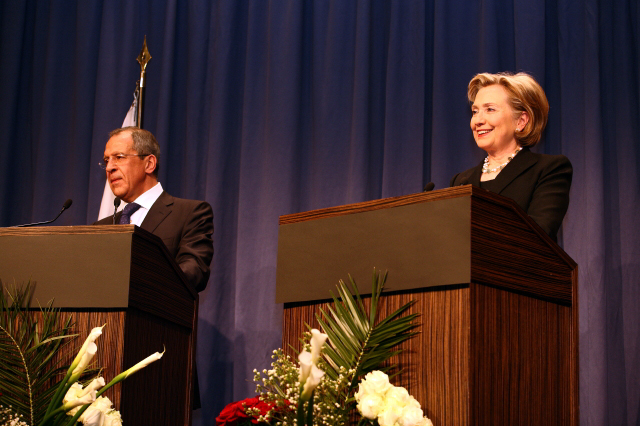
Press Conference With Russian Foreign Minister

Press conference after dinner meeting between U.S. Secretary of State Hillary Rodham Clinton and Russian Foreign Minister Sergey Lavrov in Geneva, Switzerland March 6, 2009.